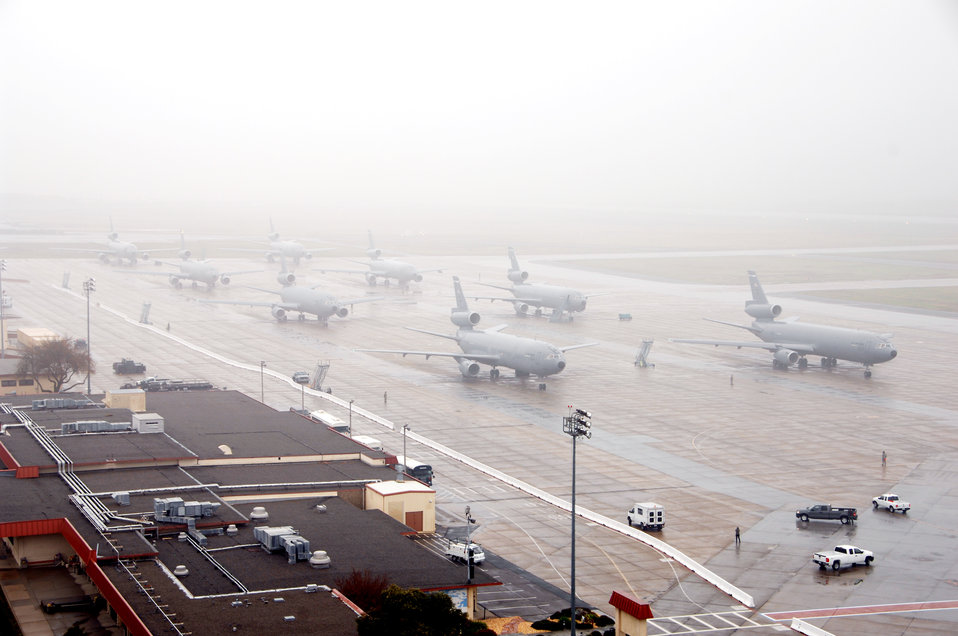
Travis officials conduct mass launch

Aircraft taxi Dec. 21 in preparation for first-ever mass launch of nine aircraft at Travis Air Force Base, Calif. The total force launch effort was an opportunity for operations, maintenance and support personnel to train together on a larger scale than normal.